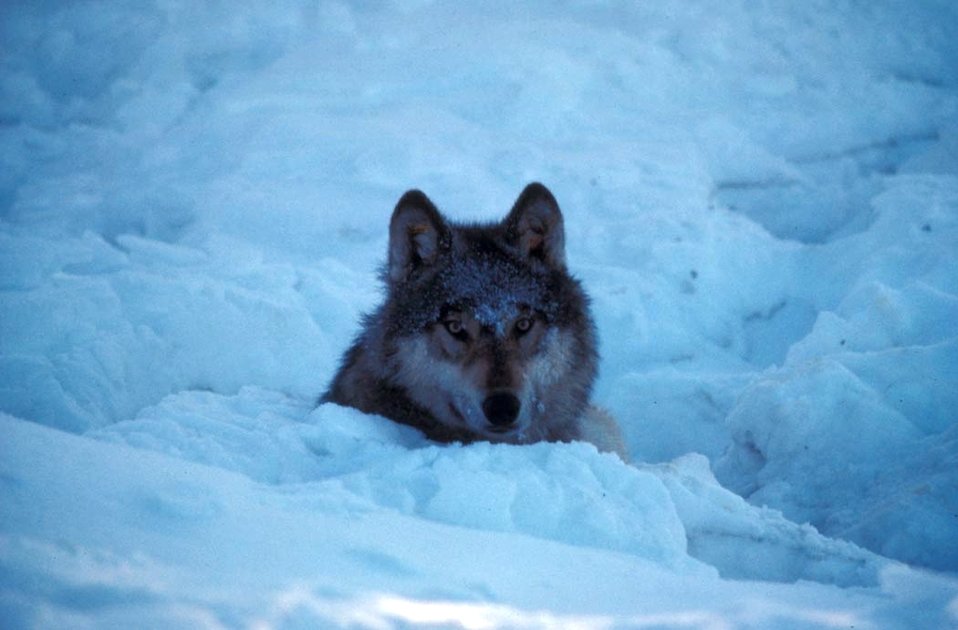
Wolf, Kenai NWR

A lone wolf keeps a lookout for prey on Kenai National Wildlife Refuge in Alaska. (USFWS)